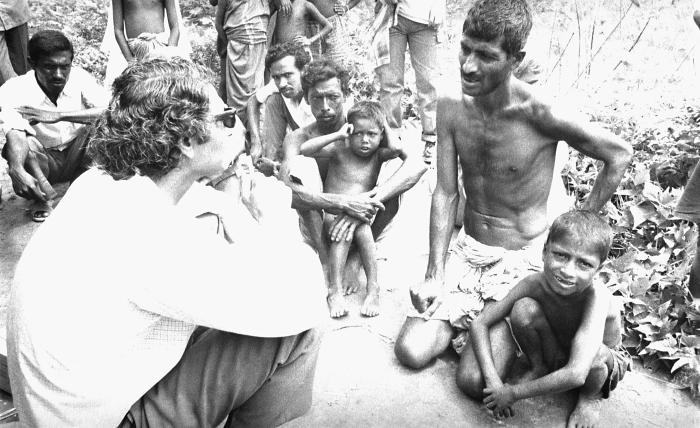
This 1975 image depicted World Health Organization (WHO) epidemiologist Dr. Hari Mehta, discussing smallpox issues with local Bangladesh villagers.In 1968, the WHO, and other world public health organizations - led by the United States and the then-Soviet Union - came together to join in the fight to eradicate smallpox from the world. The worldwide eradication of this dreaded virus was due to this Smallpox Eradication Campaign, whereupon, a mass-vaccination program was instituted across the globe that lead to the declaration in 1978 by a global commission that smallpox had been eradicated, which was officially accepted by the 33rd World Health Assembly in 1980. Smallpox is a serious, contagious, and sometimes fatal infectious disease.